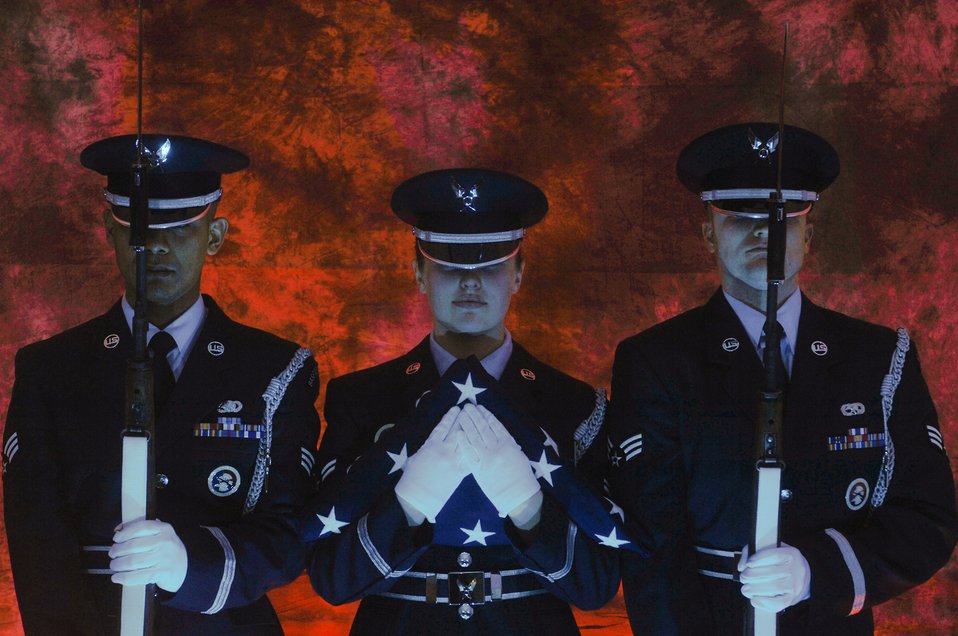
In silent repose

Senior Airman Fernando Reyes, Airman First Class Tawny Greer, and Senior Airman Sean Godwin take a moment after a ceremony. They are all members of the Minot Air Force Base Honor Guard.